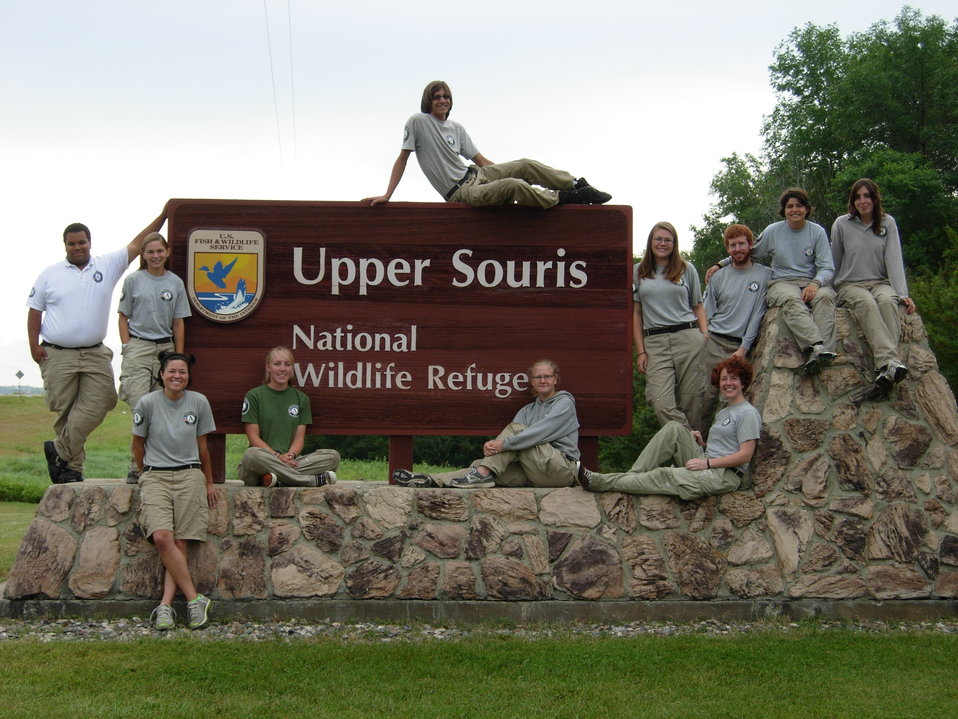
Team Oak 7 AmeriCorps Crew at Sign

The Team Oak 7 AmeriCorps crew poses for a photo near the Uppe Souris sign at the end of their program.